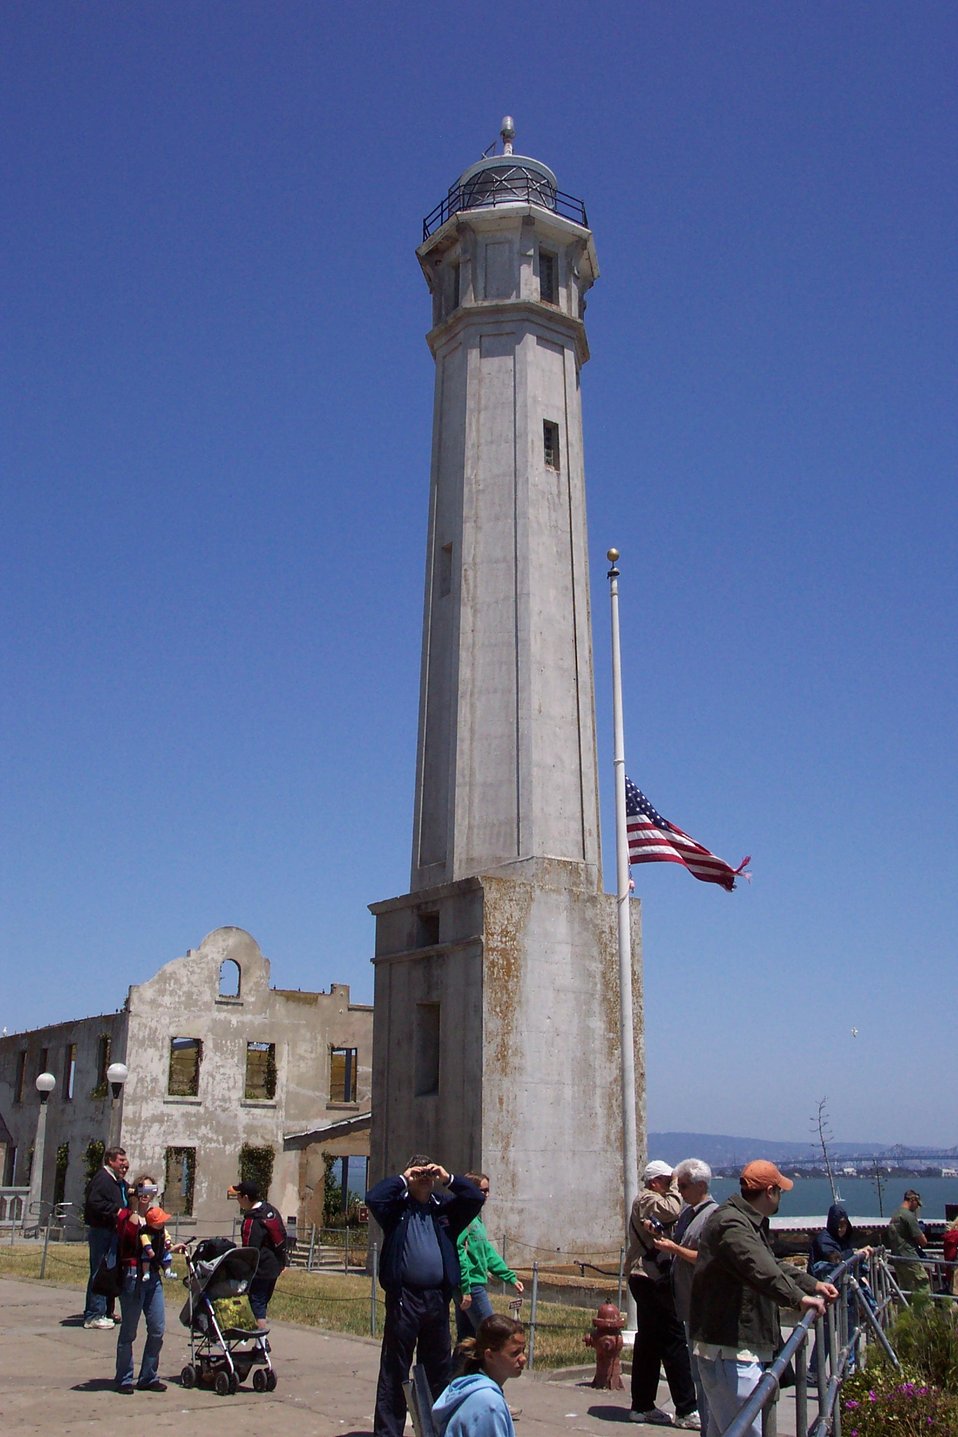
The Alcatraz lighthouse.